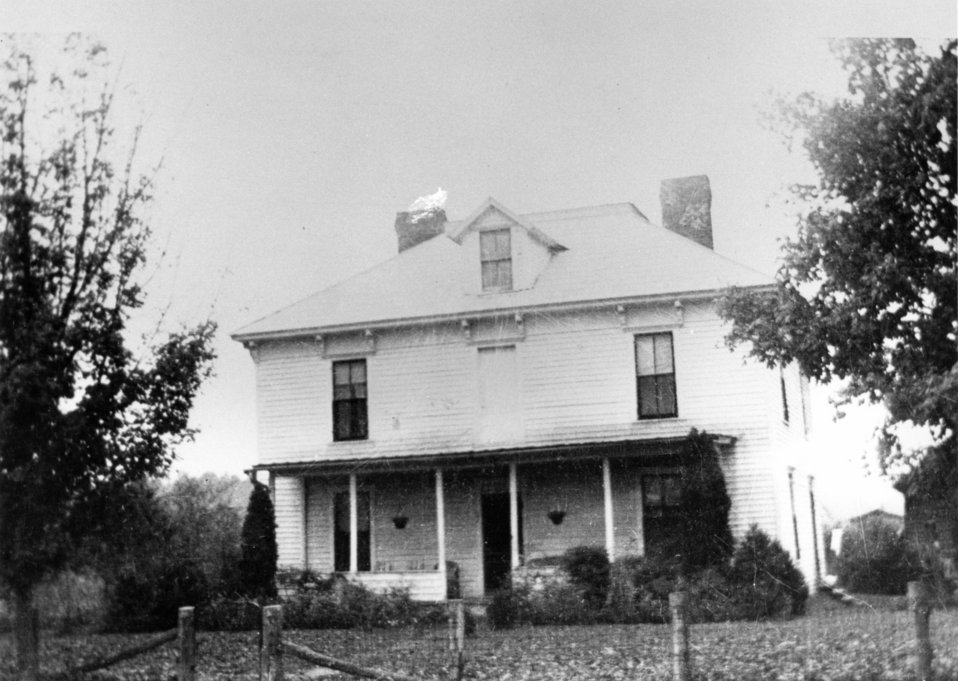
Early settlers at Oak Ridge